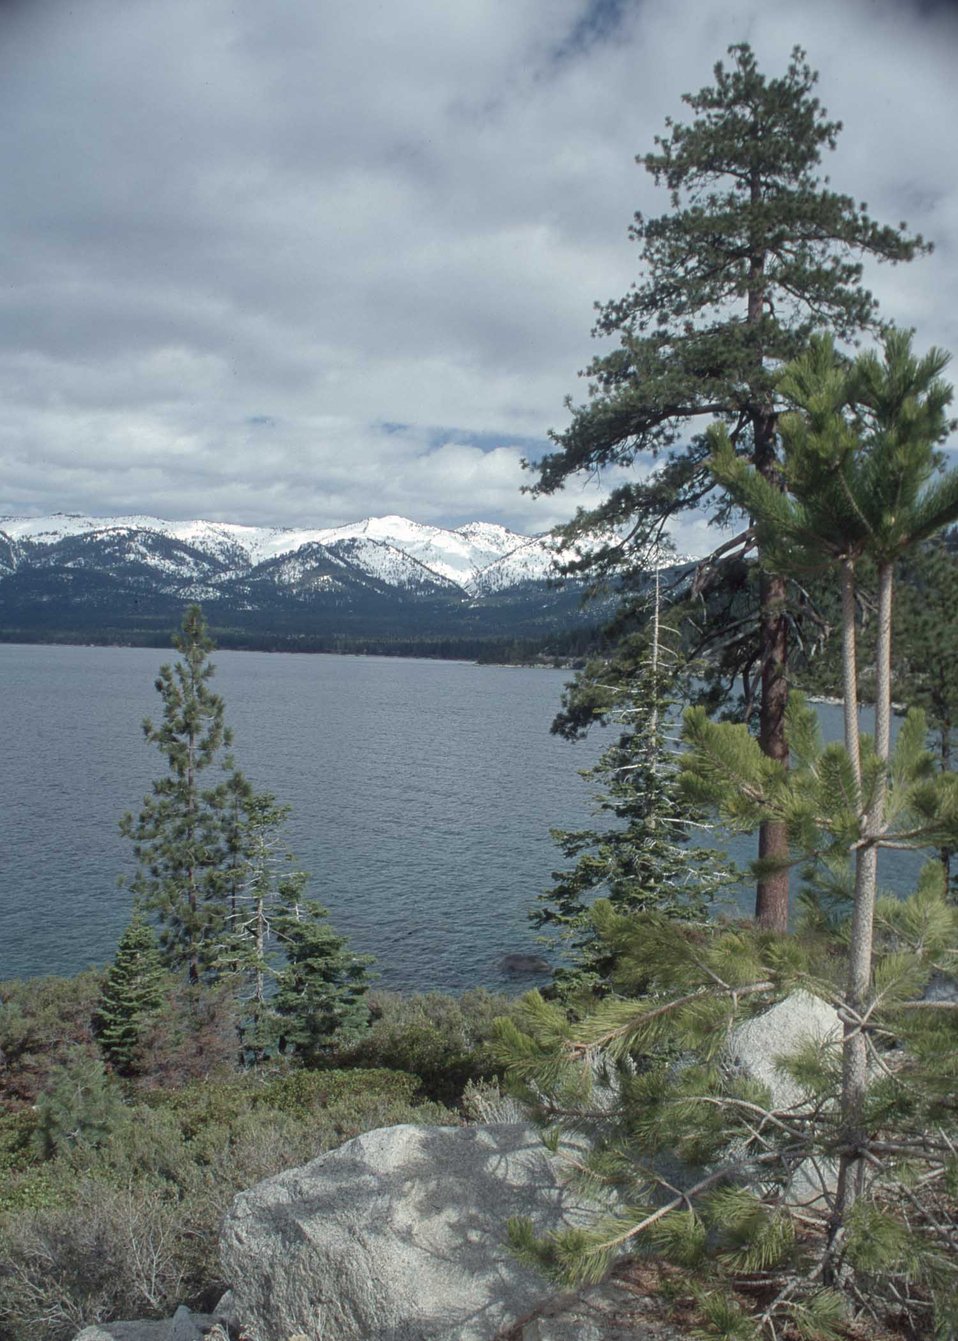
Lake Tahoe, Sierra Nevada mountains, Washoe County, NV.